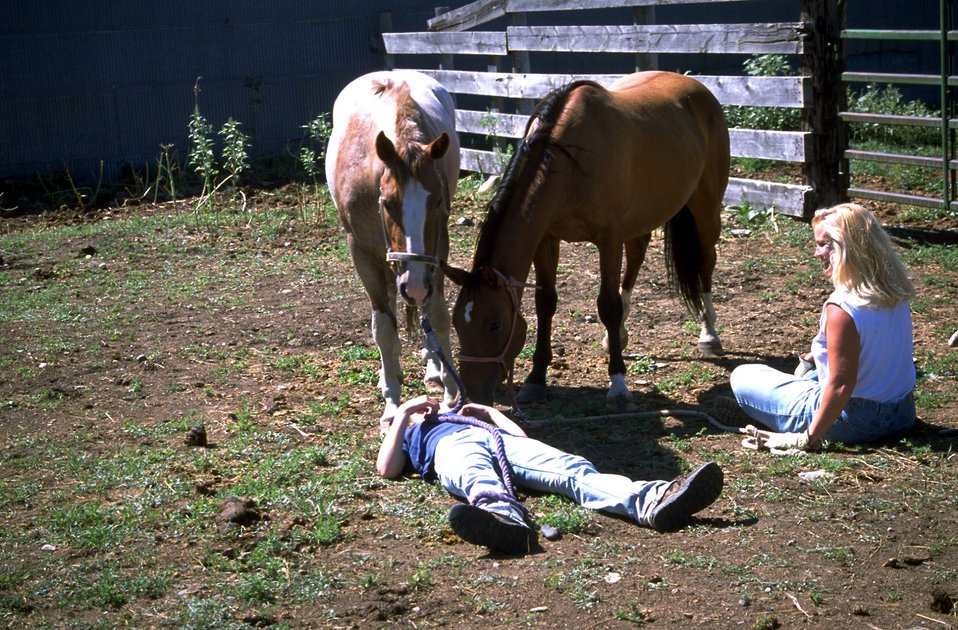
Adopted horses learning trust